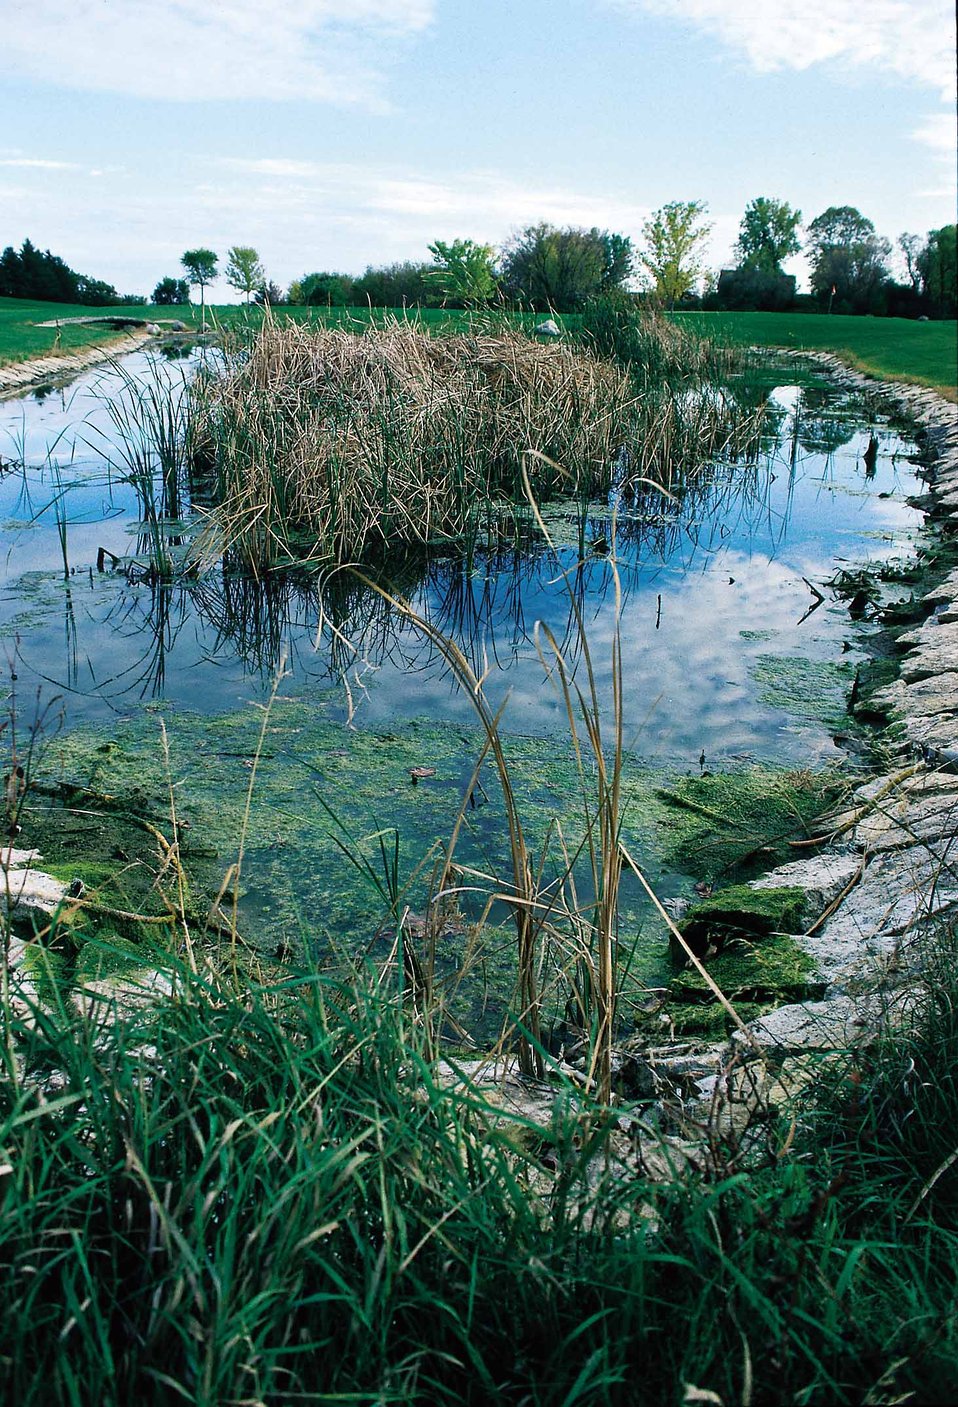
Wetland and wildlife habitat in Iowa.